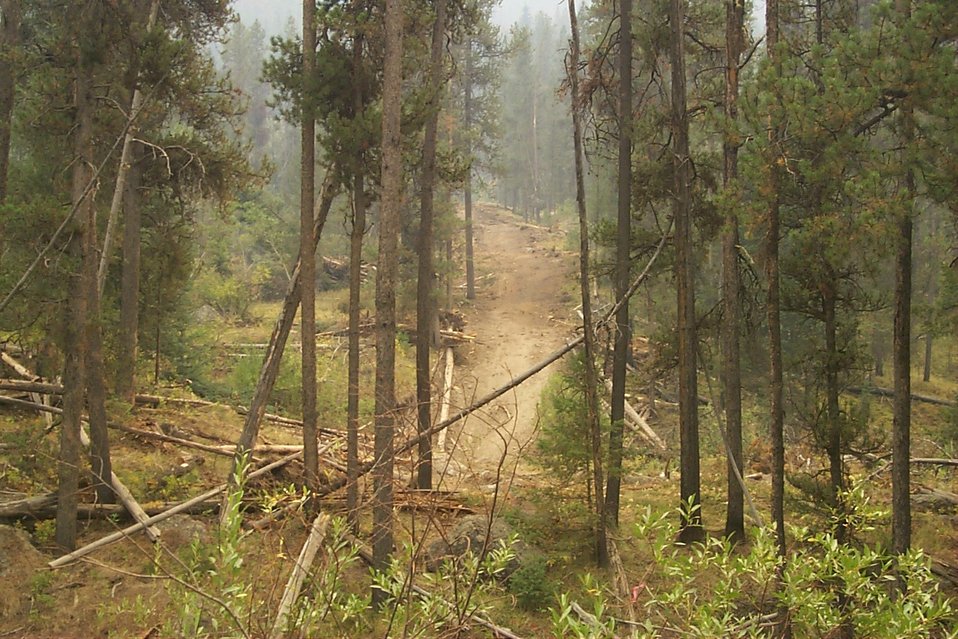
The line Fire Clearwater Fire Salmon Field Office USRD Upper Snake River District